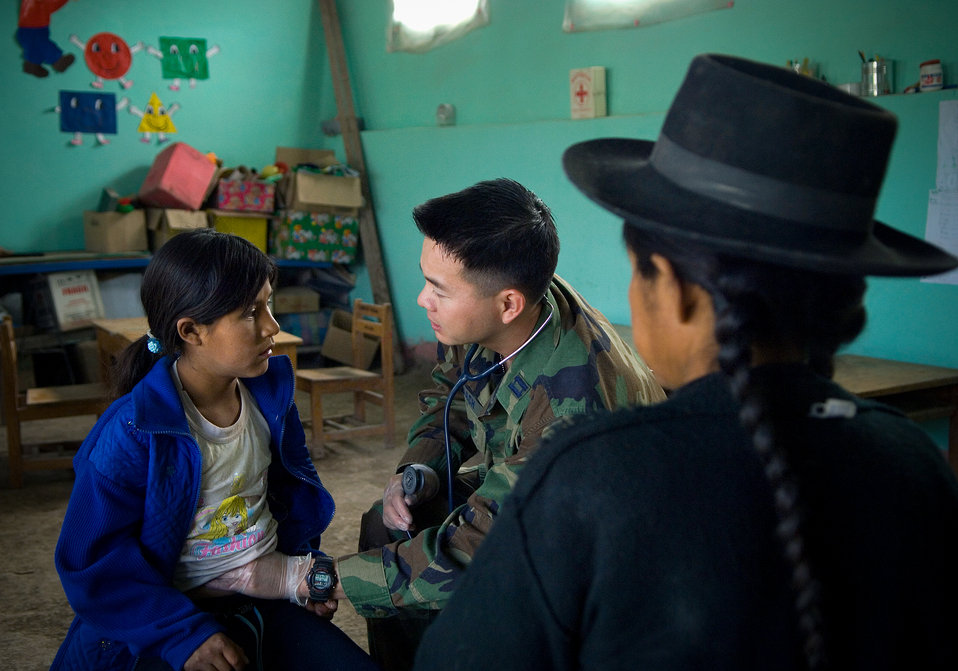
Does it hurt here?

Capt. Truong Quach performs a general medical evaluation on a Peruvian girl June 22 during free medical exams inside a schoolhouse in Ayacucho, Peru. Captain Quach is deployed from the 452nd Medical Squadron at March Air Reserve Base, Calif.